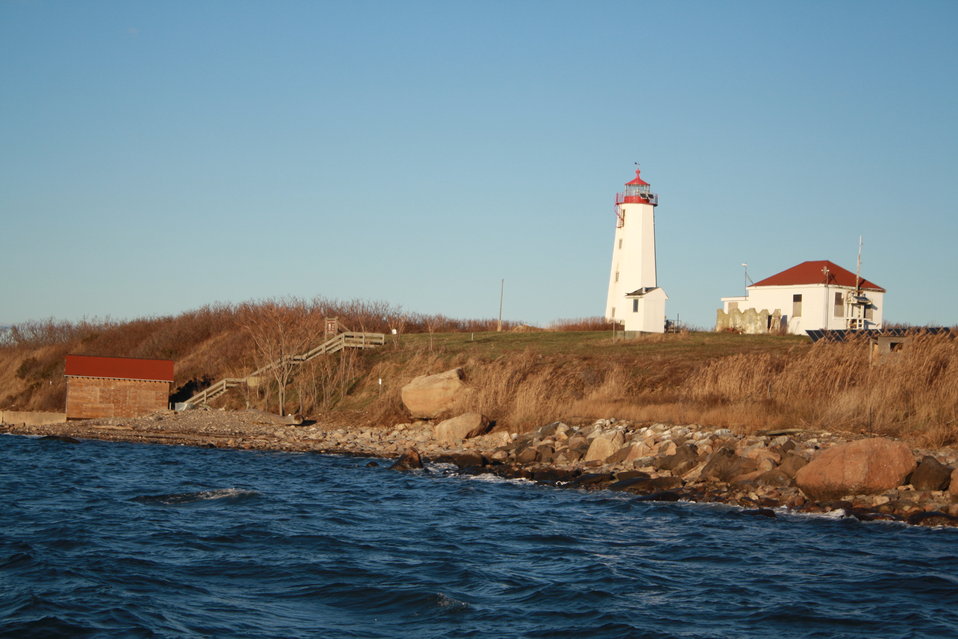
Damage at Stewart B. McKinney National Wildlife Refuge (CT)

The refuge's Falkner Island Unit. Refuge staff will soon head out to the refuge's other island units to assess damages.